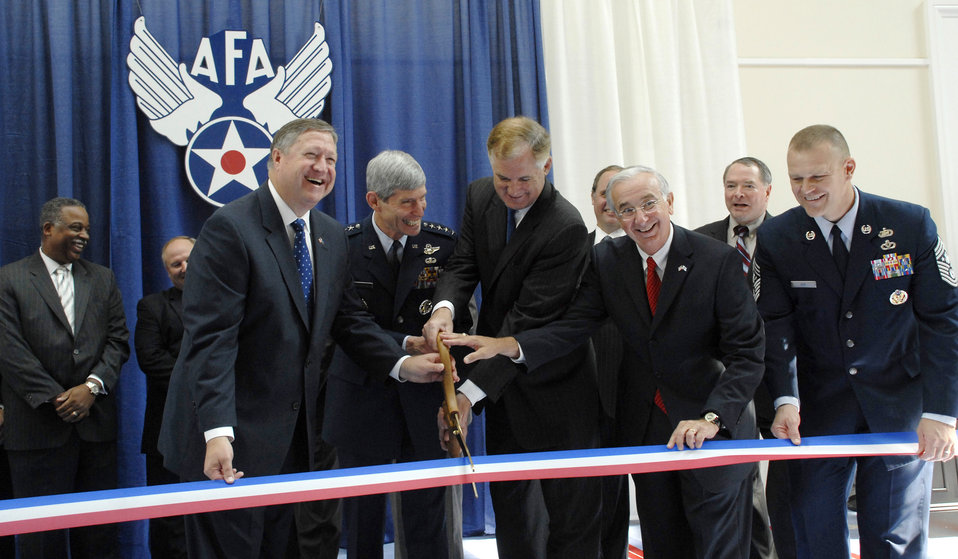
AFA Awards

Secretary of the Air Force Michael Donley welcomes conference attendees during a ribbon-cutting ceremony at the 2009 Air Force Association Air & Space Conference and Technology Exposition Sept. 14, in Washington, D.C.